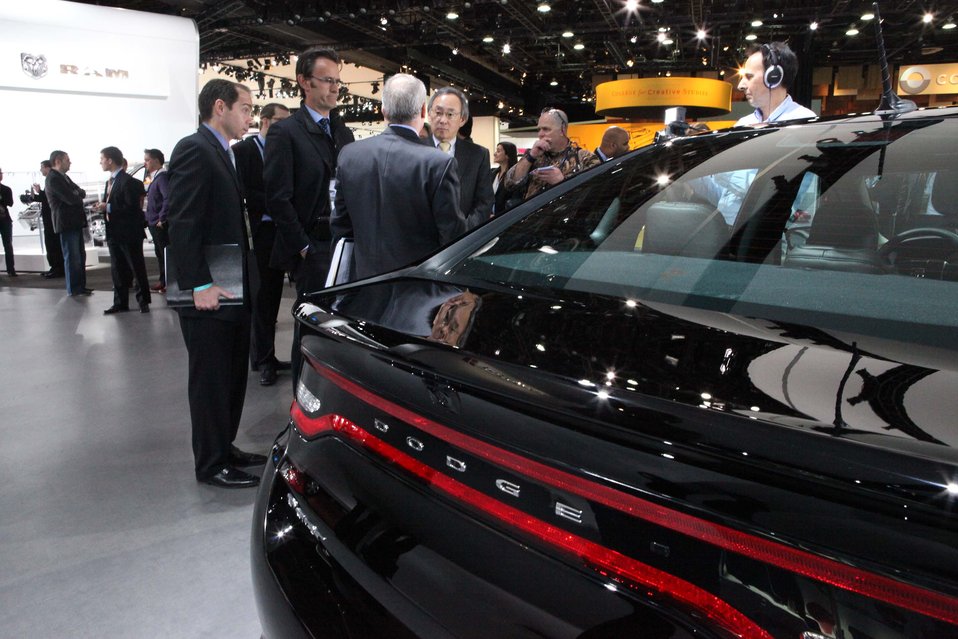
Energy Secretary Steven Chu chatting with a Dodge representative about most current technology.